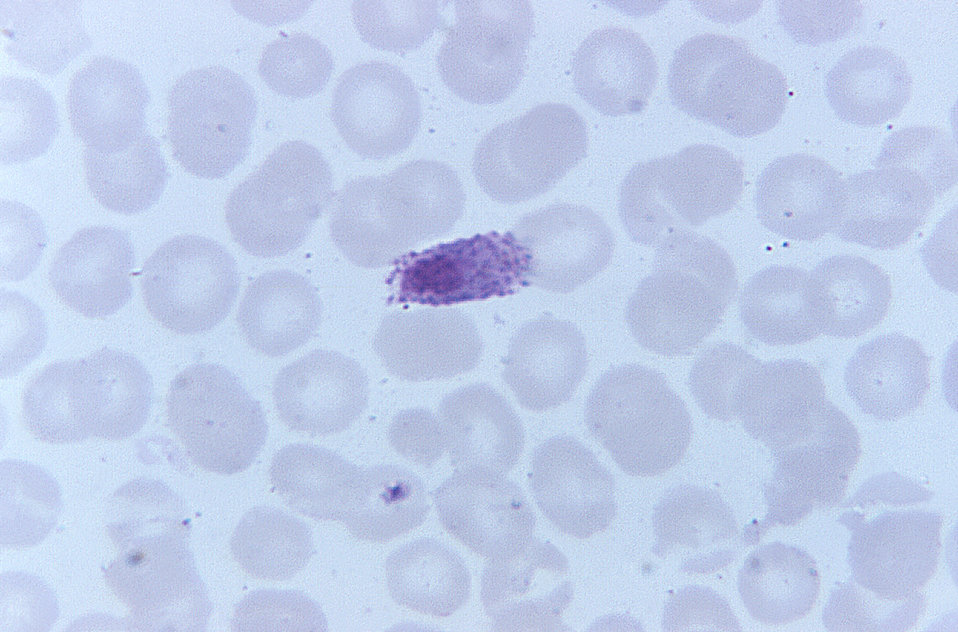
A photomicrograph of a blood smear containing a microgametocyte of the parasite Plasmodium ovale.